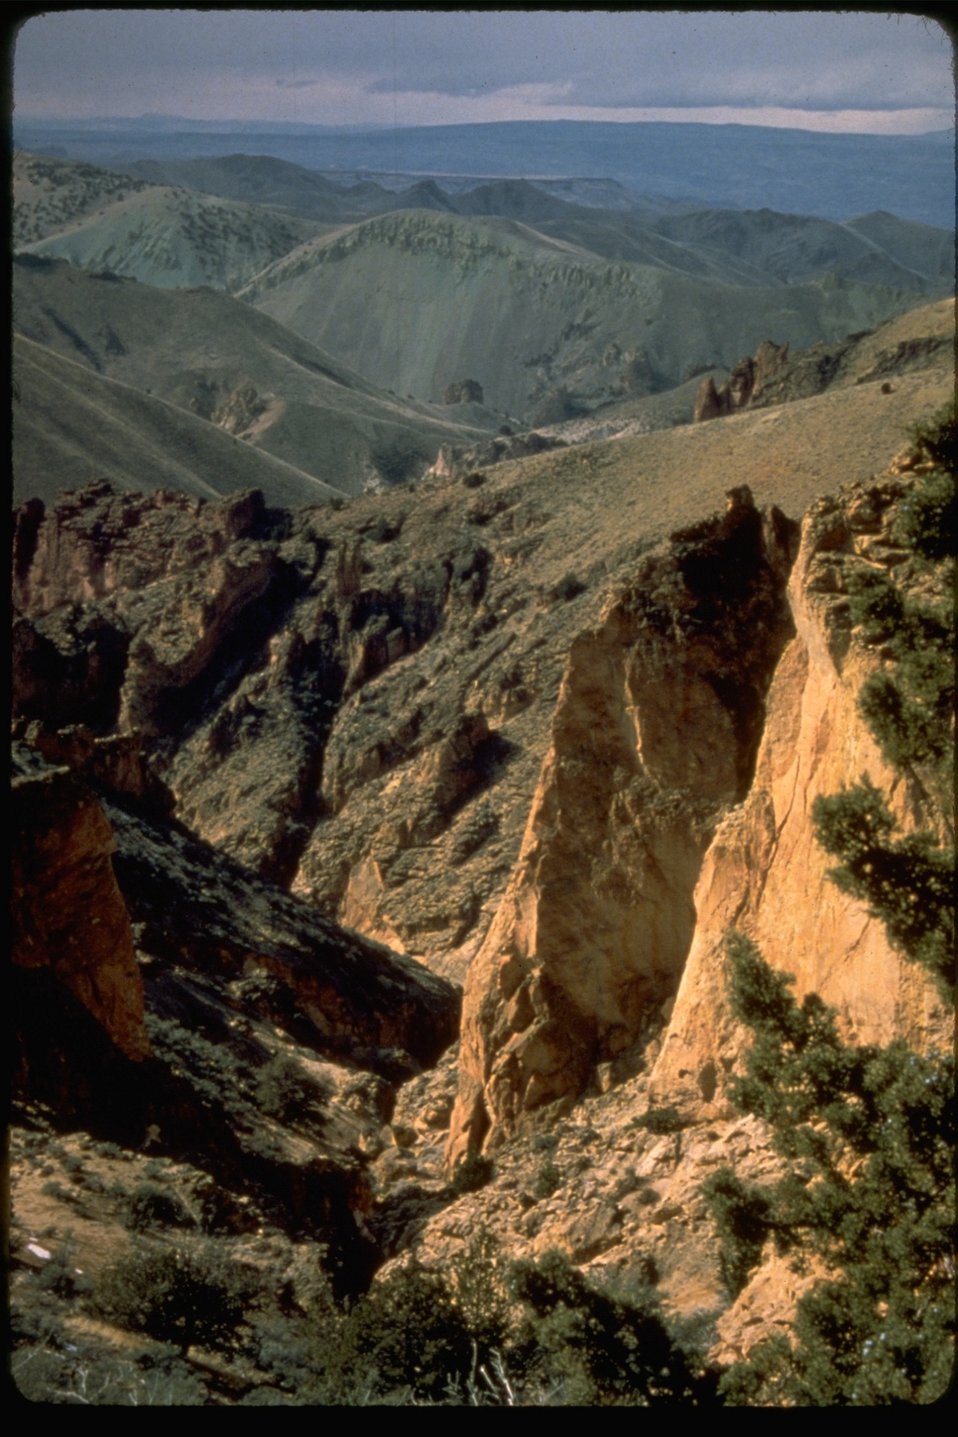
Upper Leslie Gulch Wilderness Study Area. OR 3-74.